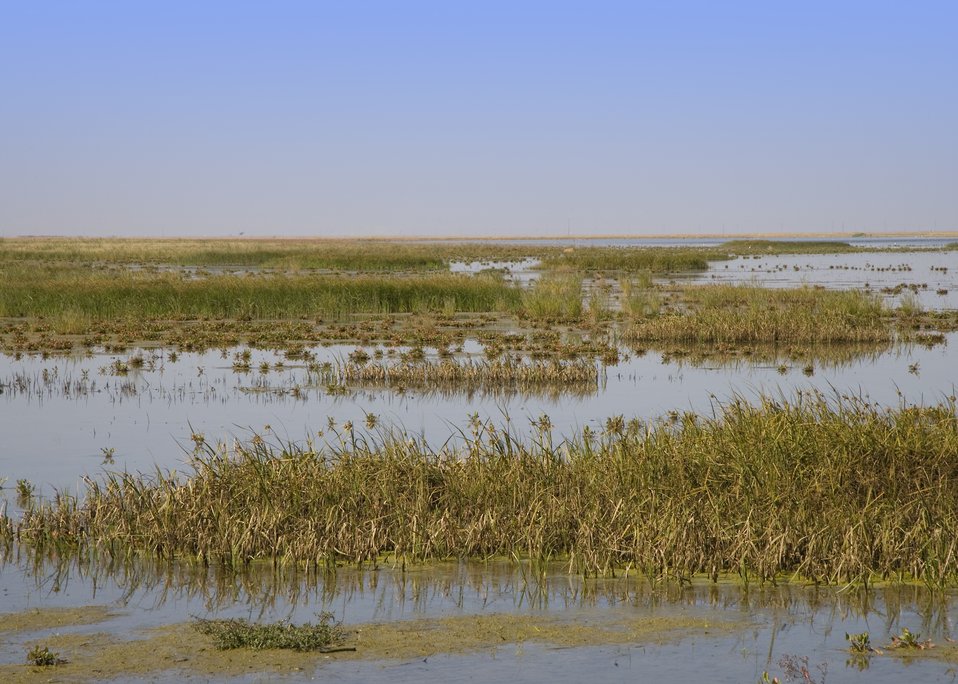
WRP contract built in 1994 that is 5,000 acres in size. California.